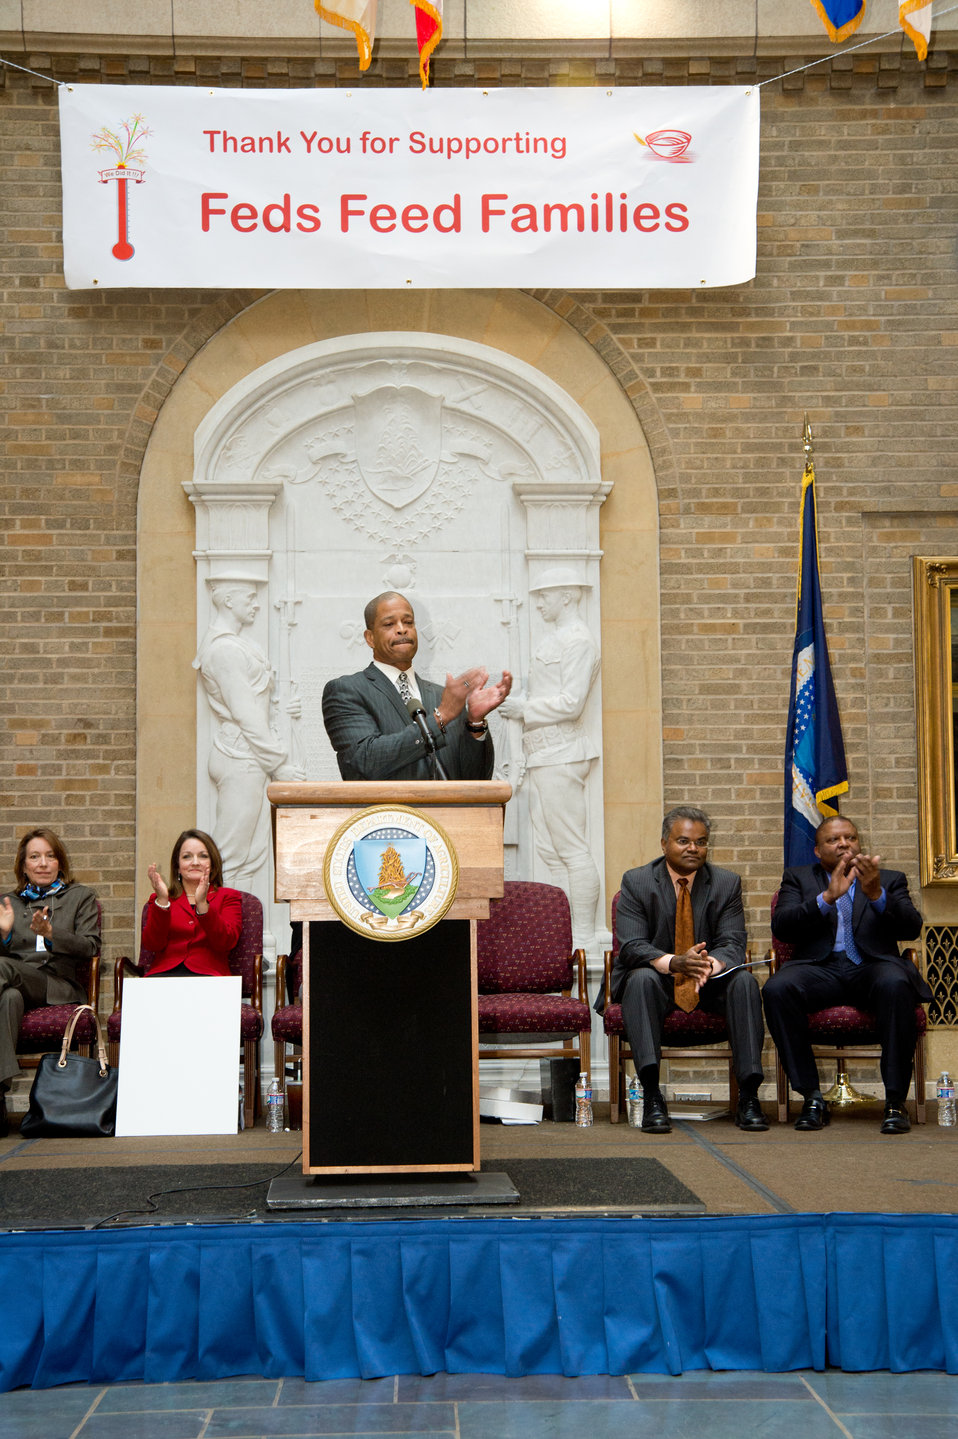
William “Billy” Milton, Jr., Chief Human Capital Officer, United States Department of Agriculture (USDA), addresses employees and partner agencies at the United States Department of Agriculture Feds Feed Families closing ceremony, on Wed., Nov. 13, 2013 in Washington, D.C. Milton provides vision and leadership to USDA-wide employee and human development programs. Federal employees nationwide stepped up the challenge of Feds Feed Families and gathered 9 million pounds of food for food banks across the nation and the National Capital Region and for families in need setting an all time record high.